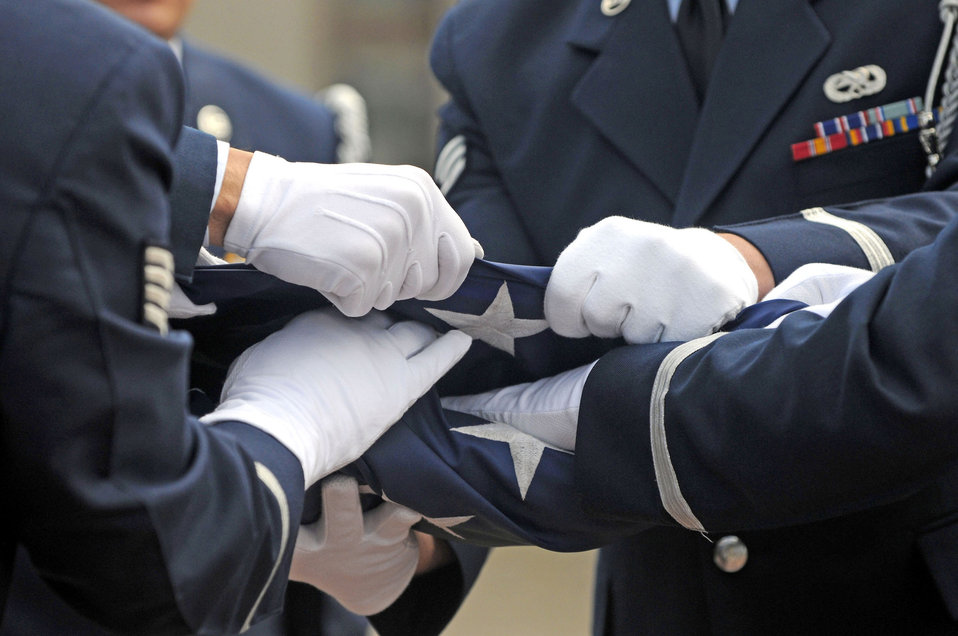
In respect and honor

Members of the 86th Airlift Wing base honor guard conduct a flag-folding ceremony during the Ramstein Honor Guard Appreciation Day, Sept. 11, 2009, at Ramstein Air Base, Germany.